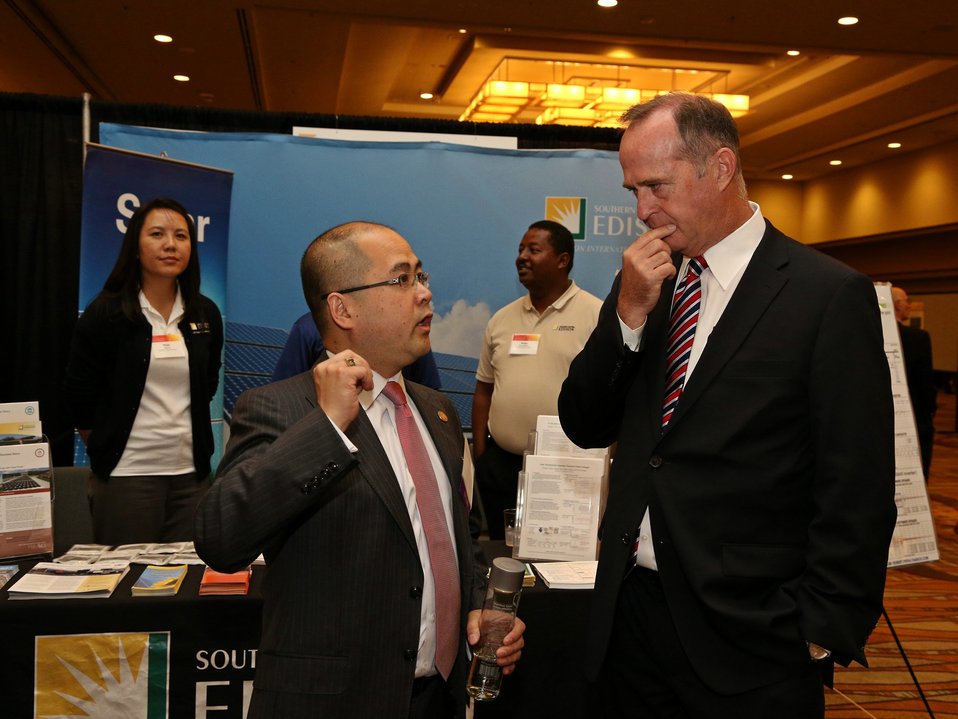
Tech Forum 3

Anaheim Mayor Tom Tait with SunShot Director Minh Le at the Tech Forum.